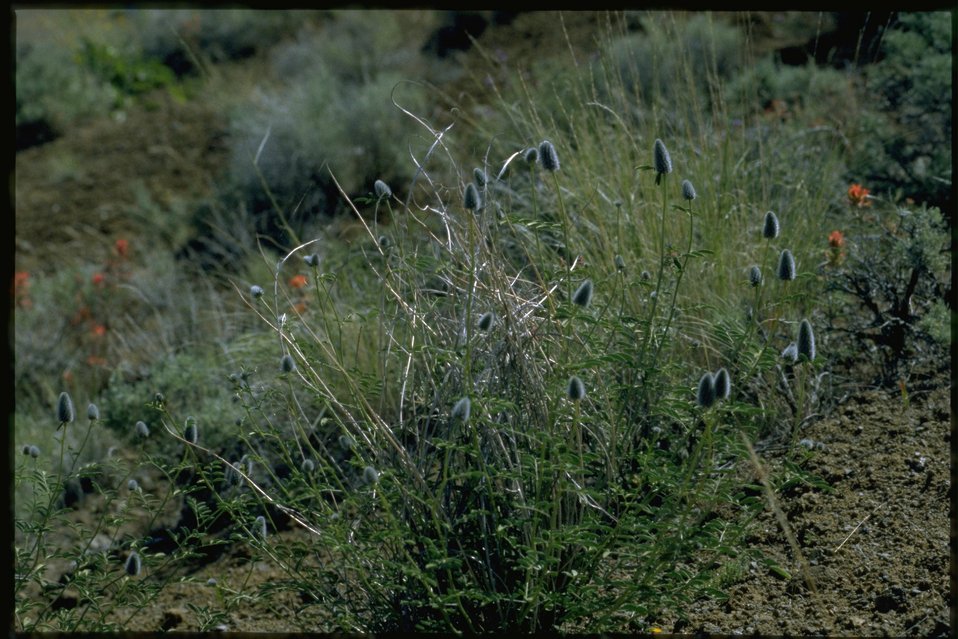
Farshot of Trifolium.